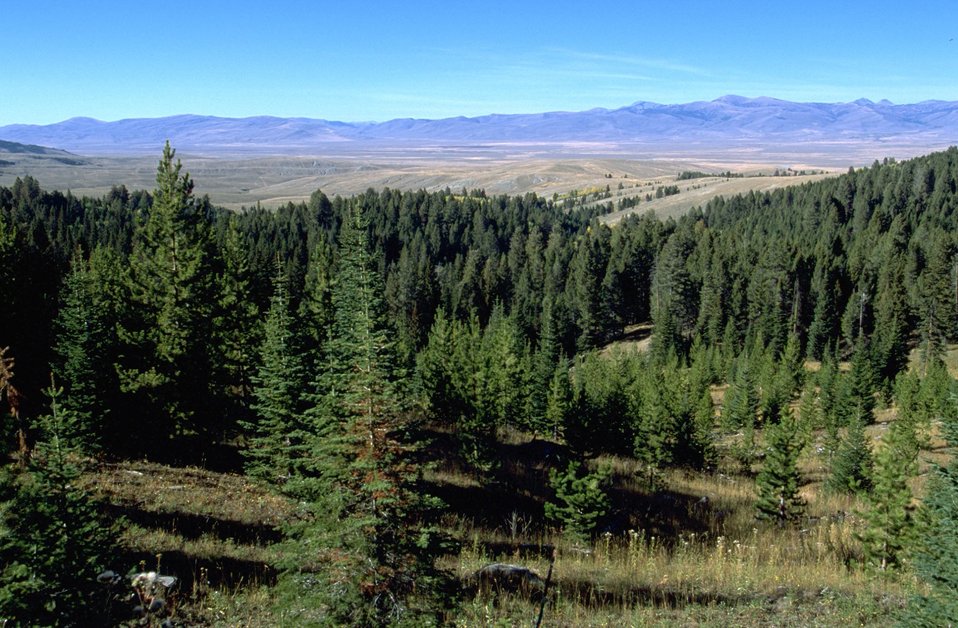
View of Centennail Valley from the Centennial Mountains